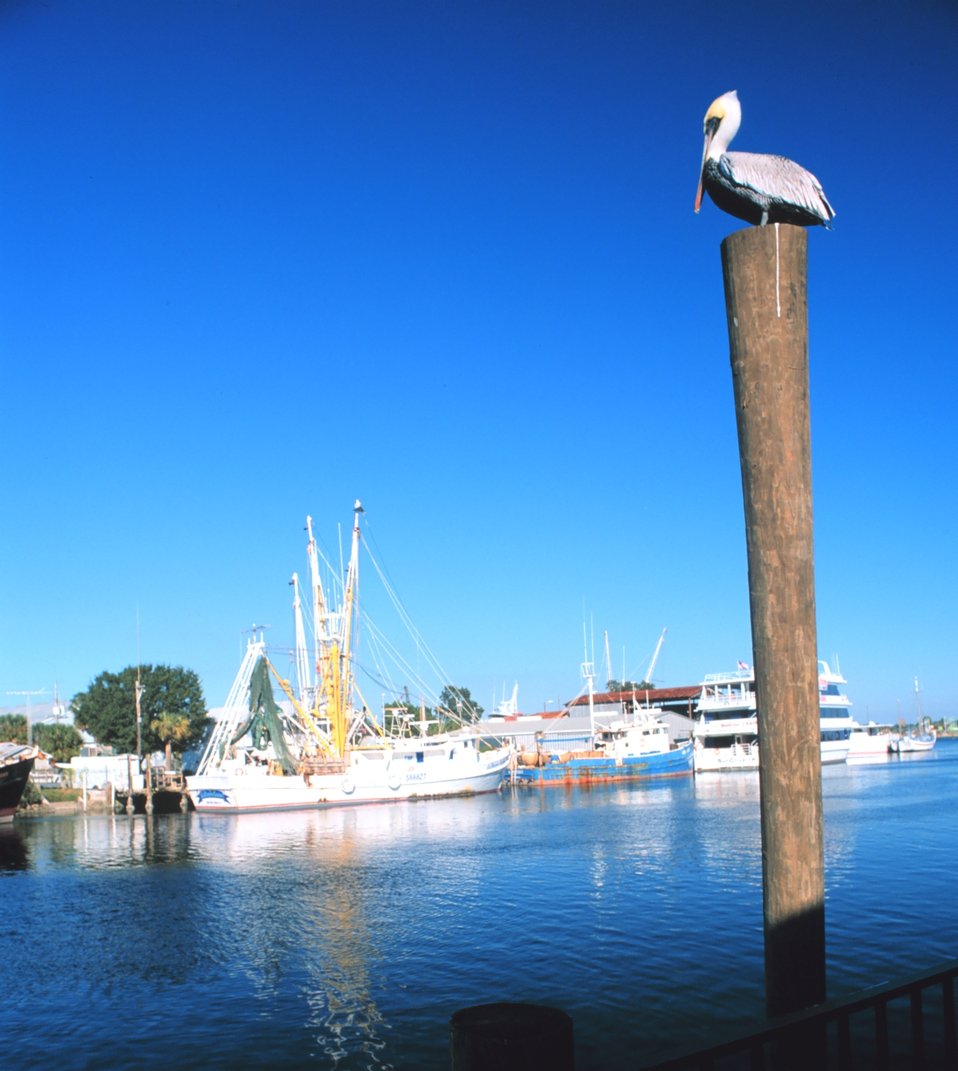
A pelican makes use of a piling as a perch